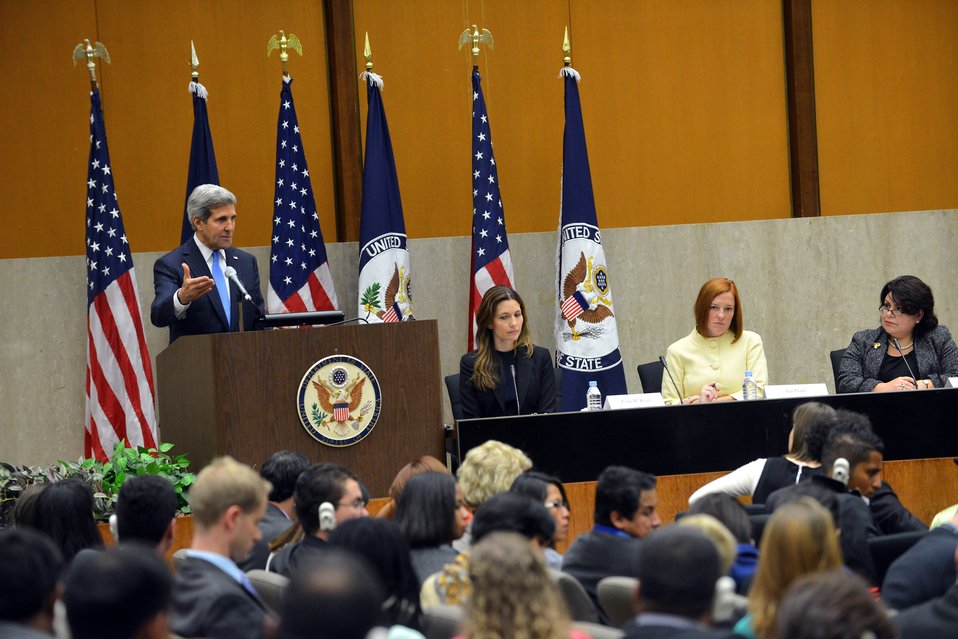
Secretary Kerry Delivers Remarks to the Participants of the Edward R. Murrow Program for Journalists

U.S. Secretary of State John Kerry delivers remarks to participants of the Edward R. Murrow Program for Journalists at the U.S. Department of State in Washington, D.C., on October 30, 2013.